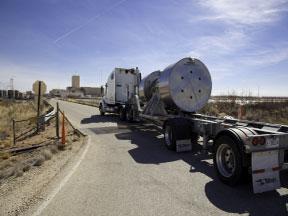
TRU Shipments to WIPP

On February 27, the first Remote-Handled Transuranic Waste shipment from DOE’s Oak Ridge, Tennessee site safely arrived at the Waste Isolation Pilot Plant near Carlsbad, New Mexico.